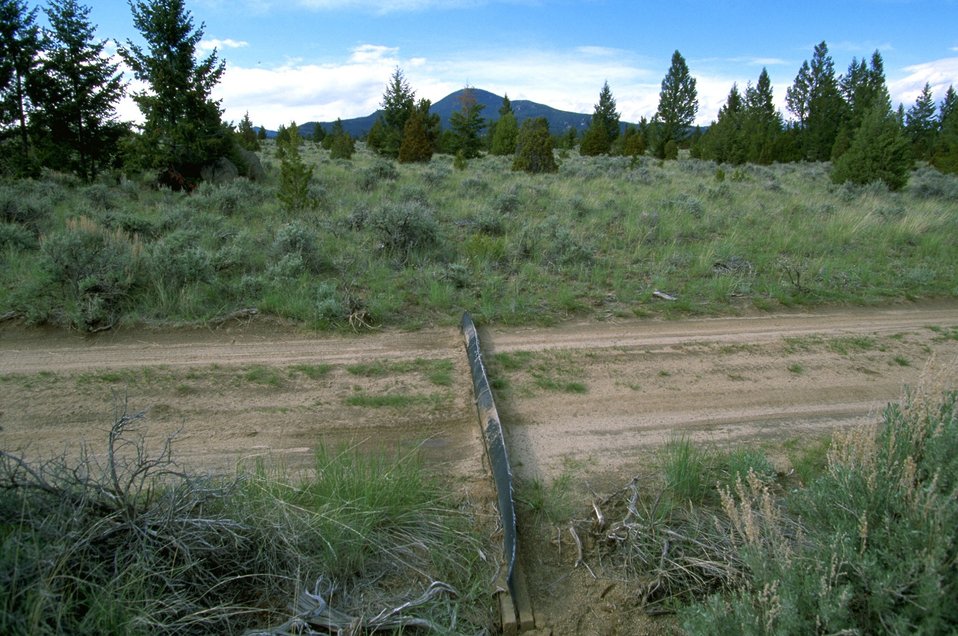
Closeup view of a water bar on a road in the Pipestone Hills